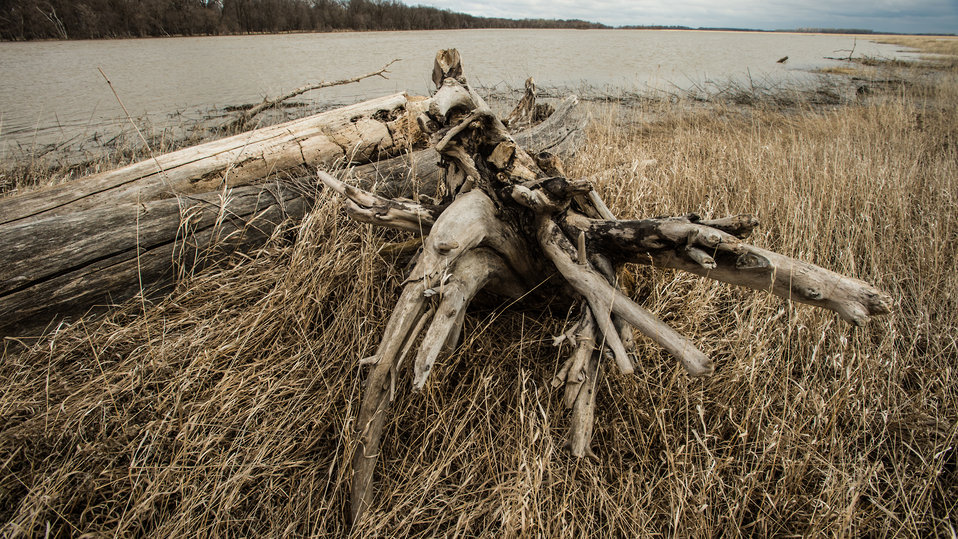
Woody debris on Neil Hanson Emergency Watershed Protection (EWP) Flood Plain Easement located along Red River east of Bowesmont, and part of the Red River basin in ND, Wednesday May 1, 2013. To learn about the Red River Basin Initiative, see www.mn.nrcs.usda.gov/news/features13/RRBI.html.